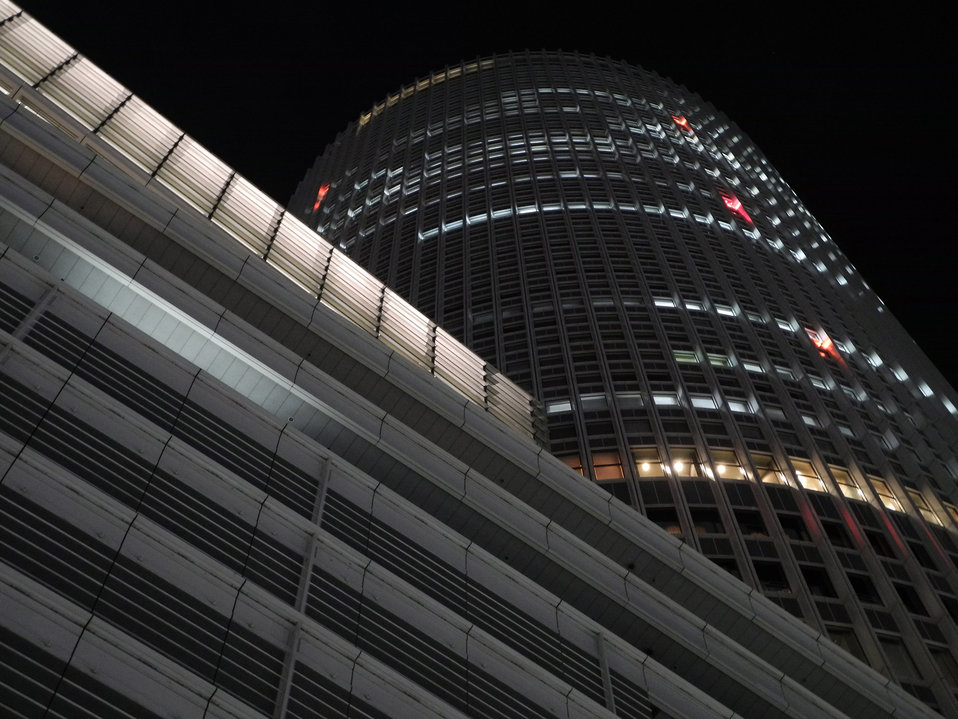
Night towers

Jr towers nagoya japan.